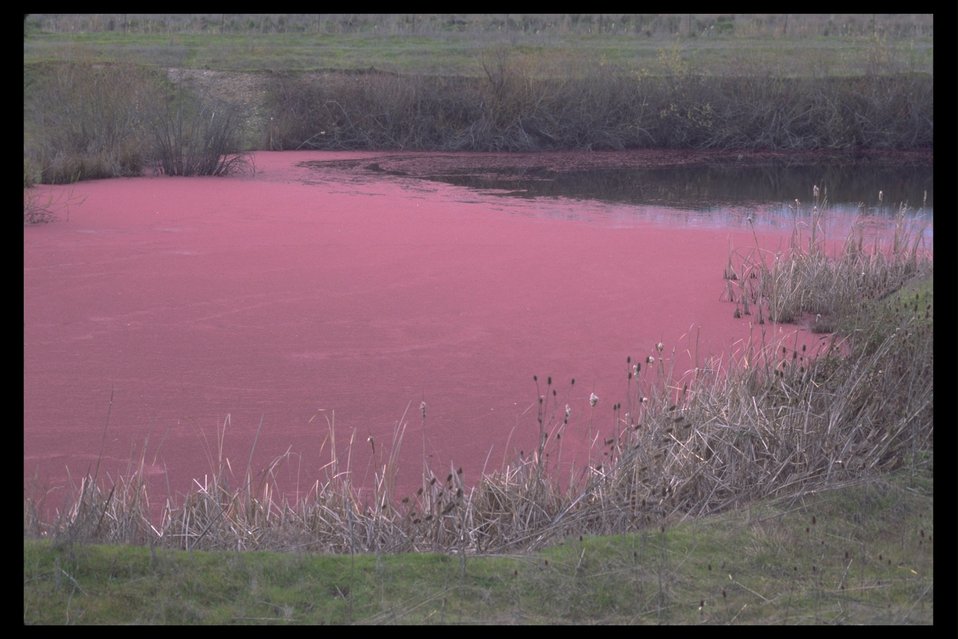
Algae bloom on pond at the Denman Wildlife Area near White City, Oregon.